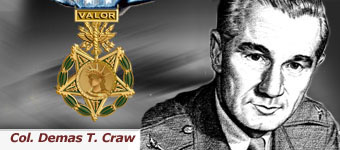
Col. Demas T. Craw volunteered for a perilous mission to go through enemy lines to convince the Vichy French to stop their hostilities and unite with the Allies. For his sacrifice he was awarded the Medal of Honor posthumously.